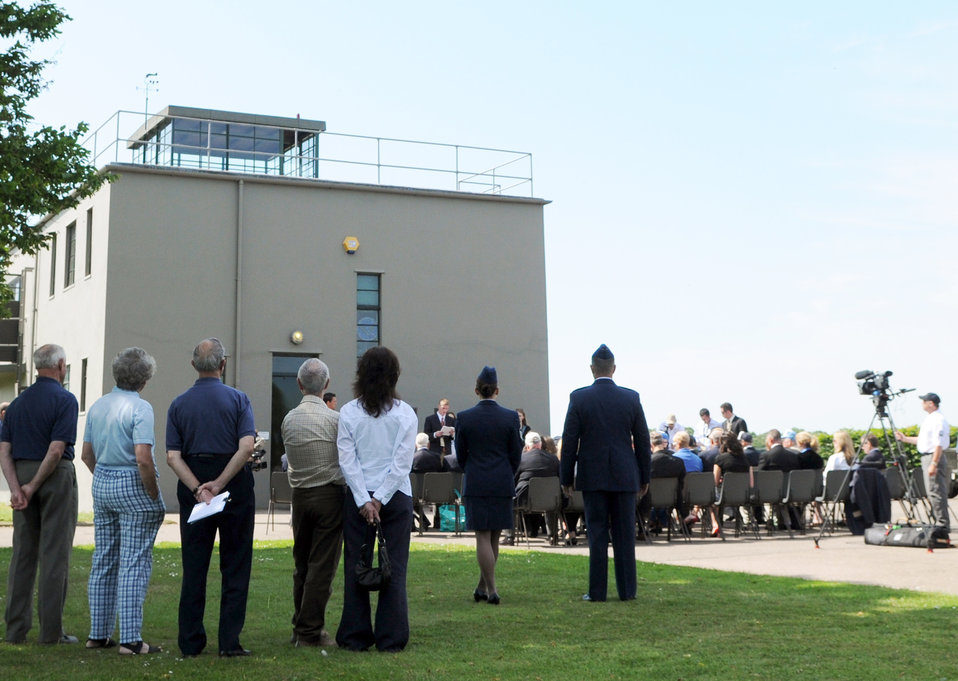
World War II vets visit former home

A group listens to a story about the D-Day landings at Normandy in World War II read by a college student from an interview with a veteran who was there for the invasion June 1 at Thorpe Abbots, England. The reading was part of a 65th anniversary of the operation ceremony honoring the servicemembers who fought in World War II, particularly the allied invasion of France.